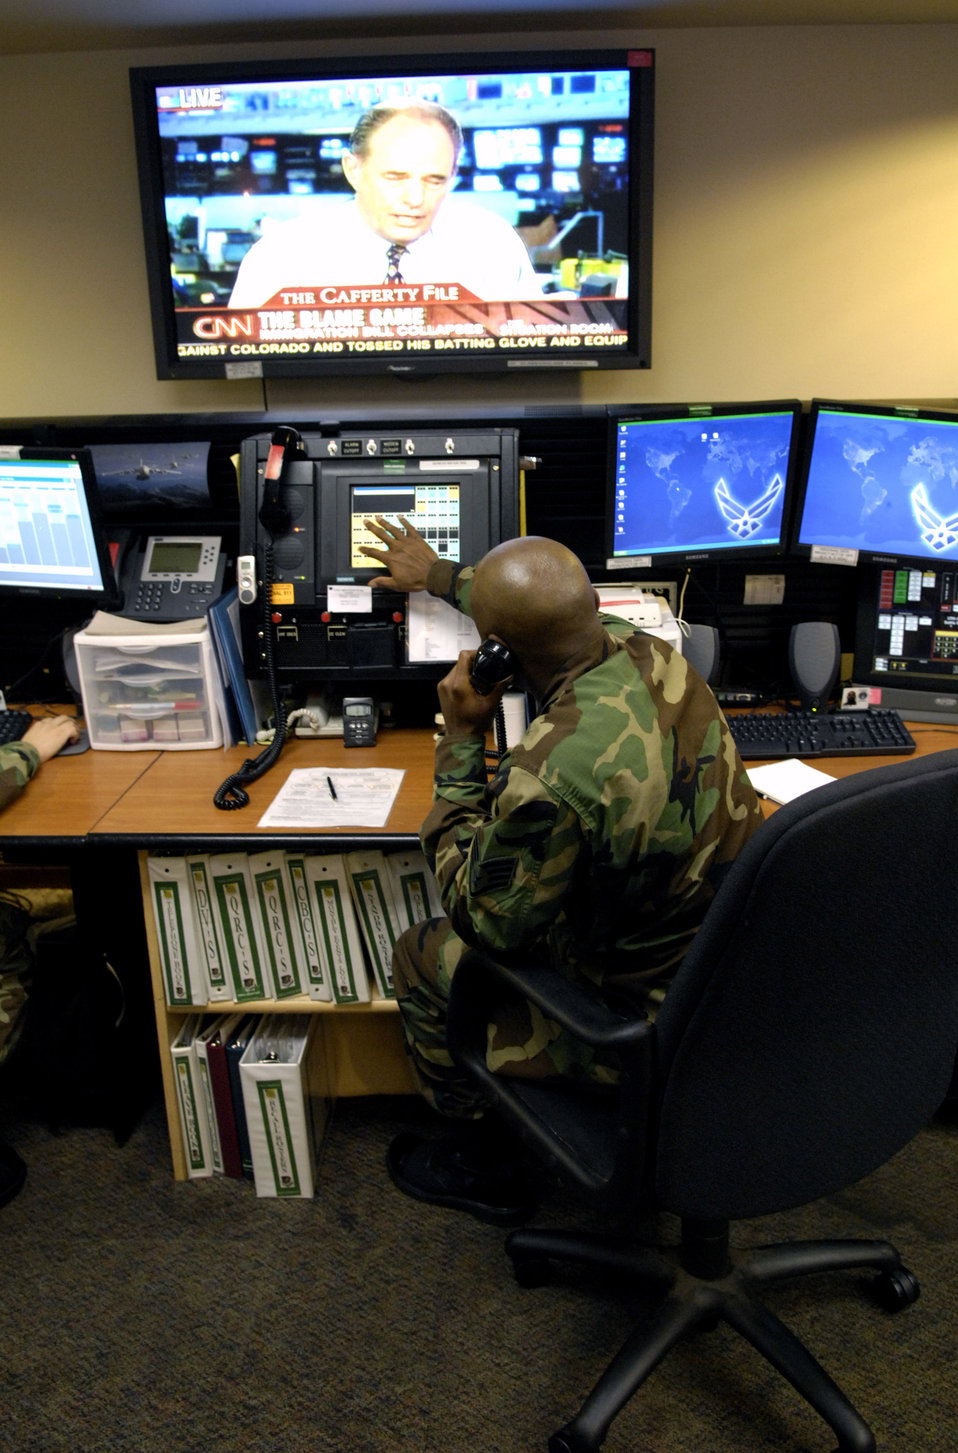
'One command post' initiative beneficial to Airmen

Staff Sgt. Lynn Brown works at his control console inside the command post June 8 at Hickam Air Force Base, Hawaii. Sergeant Brown is an emergency actions controller with the 15th Airlift Wing.